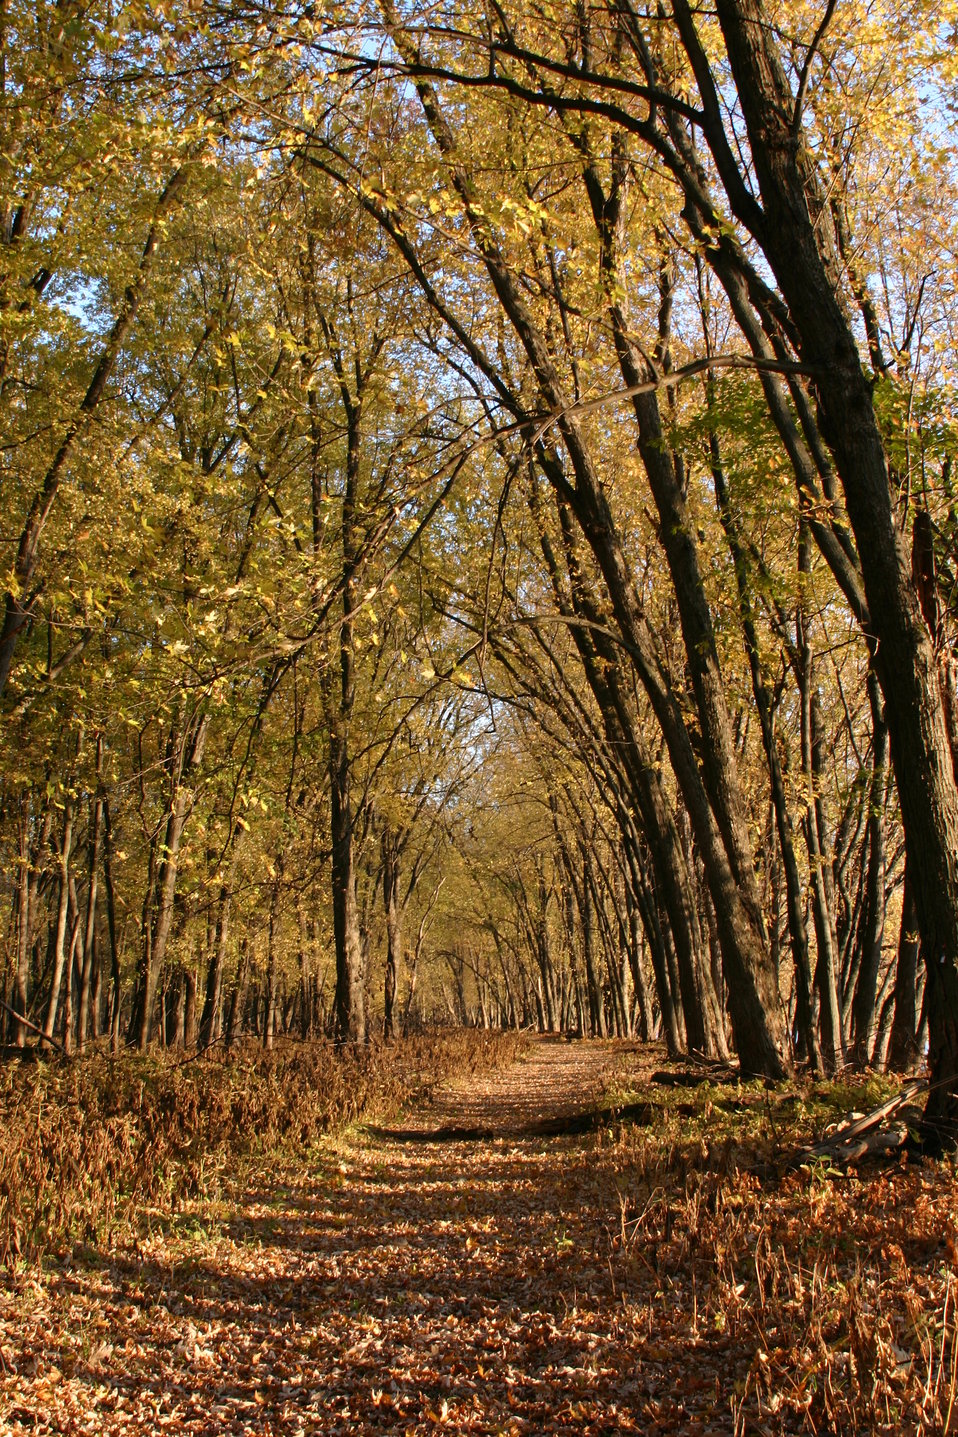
Jeep Trail in Fall 2011

The Jeep Trail along the Missisquoi River Delta at Missisquoi NWR. Fall foliage lingered to create a golden canopy over this popular accessible public use trail this year.